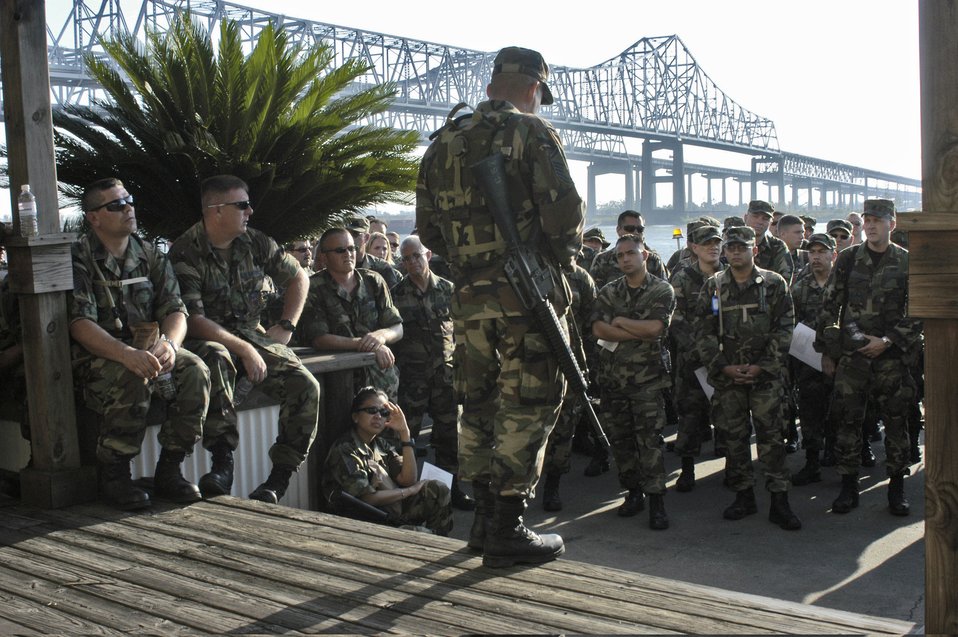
Daily brief

NEW ORLEANS -- Master Sergeant Oscar Tey briefs the day's taskings Sept. 9. The 149th Fighter Wing is deployed as part of Task Force San Antonio, providing military support in the wake of Hurricane Katrina. The 149th FW is from the Texas Air National Guard in San Antonio.